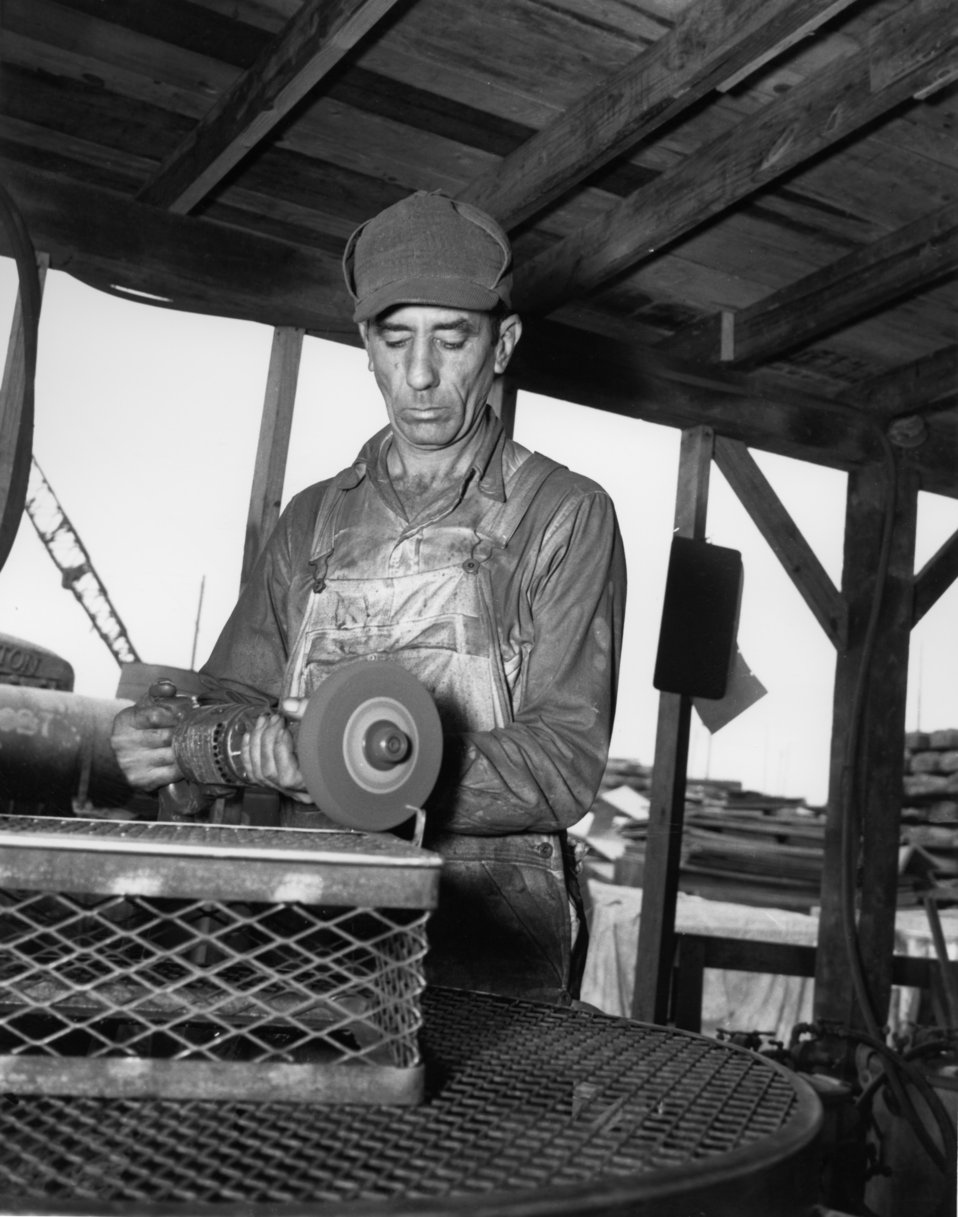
War Vet George Brown J.A. Jones Paint Shop 1944 Oak Ridge

pro72-3 DOE photo Ed Westcott 10-5-1944 Oak Ridge Tennessee